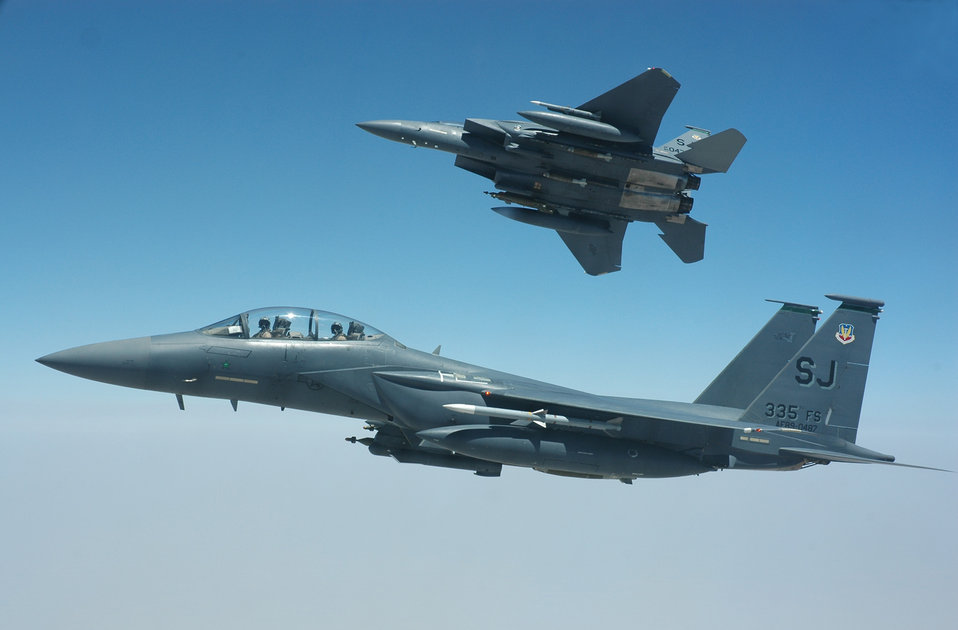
Airpower Summary for June 12, 2007

Air Force F-15E Strike Eagles cover the skies over Southwest Asia. F-15Es provide close-air support for Operation Enduring Freedom. Coalition aircraft flew 40 close-air-support missions for OEF June 12.